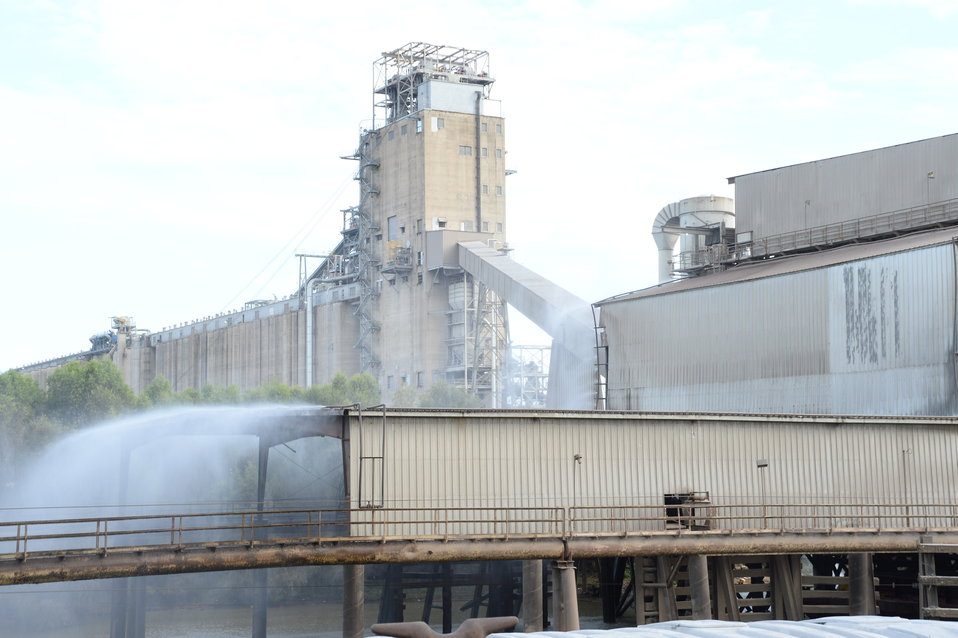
The transfer area is hosed down to keep dust levels low to prevent an explosion at the grain transfer facilities near the Port of New Orleans in New Orleans, LA on Tuesday, Nov. 19, 2013.